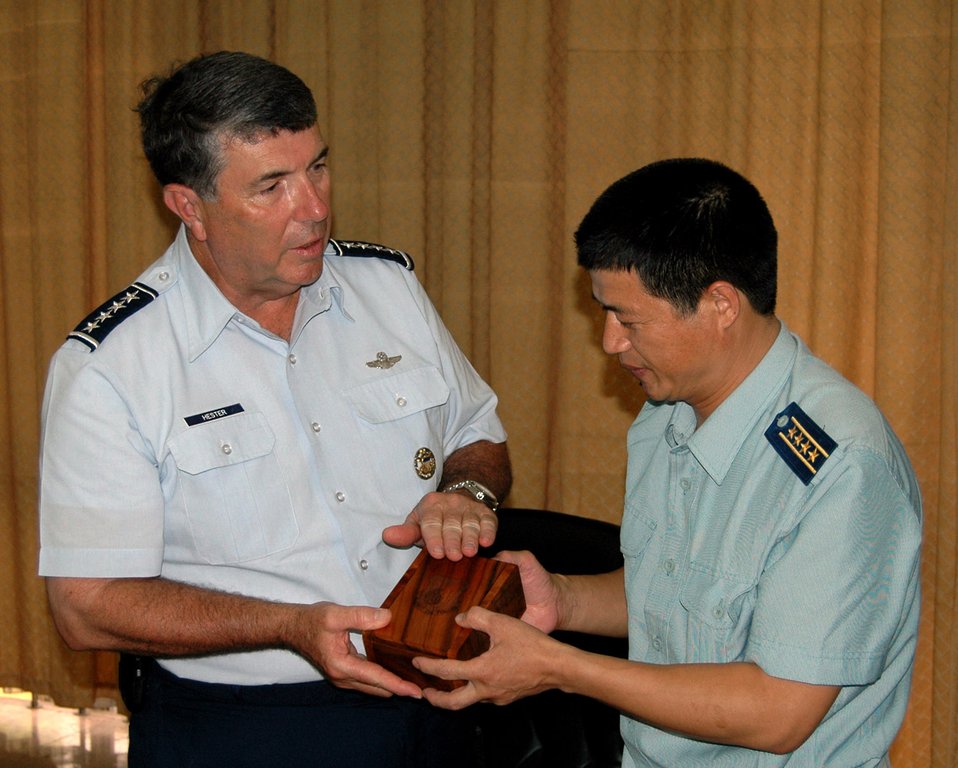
Chinese military hosts PACAF commander

Gen. Paul V. Hester explains the symbolism of Pacific Air Forces on an engraved koa wood box as he presents it to Chinese Senior Col. He Quanshou July 24 at Jianqiao Air Base, China. General Hester is the PACAF commander, and Senior Colonel Quanshou is the commander of the 28th Air Division, People's Liberation Army Air Force.